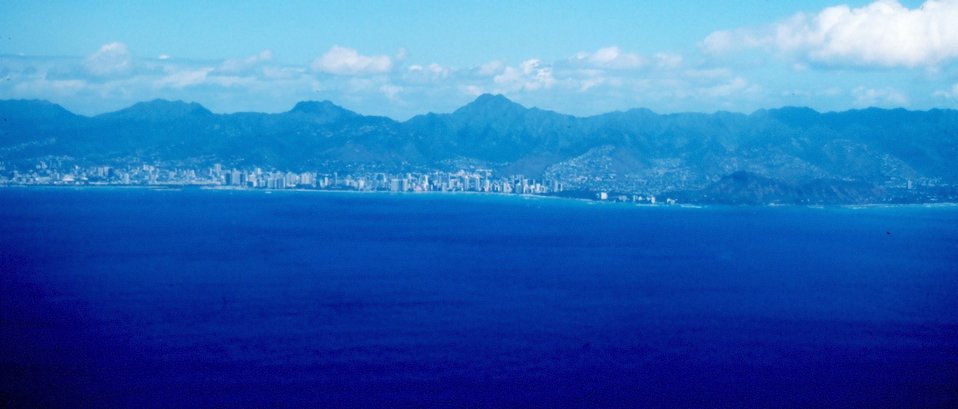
Honolulu from the air